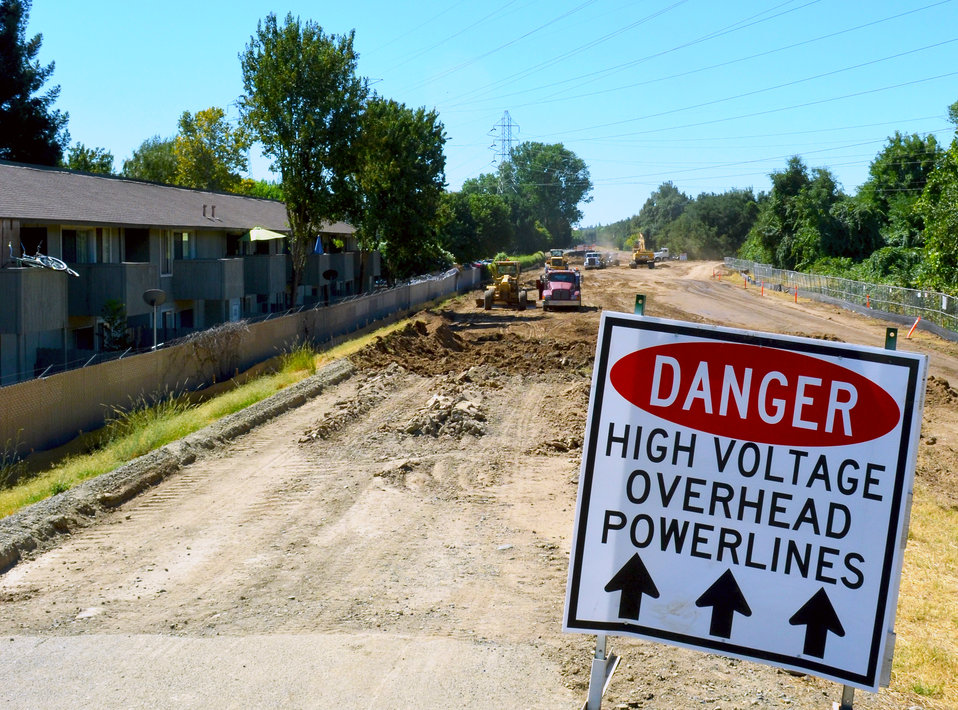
Construction zone near Riverglen by the River apartments in Sacramento

A danger sign reminds contractors to be wary of high-voltage power lines near the entrance of a levee construction zone along the American River’s north bank between Spanos Court and Campus Commons golf course in Sacramento, Calif., Aug. 28, 2012. To accommodate the large levee equipment and minimize the impact to local residents, the power lines will be de-energized for the nighttime-only work scheduled from September 10-15. The work is part of a joint flood-risk reduction effort between the Corps, the state of California’s Central Valley Flood Protection Board and Sacramento Area Flood Control District.